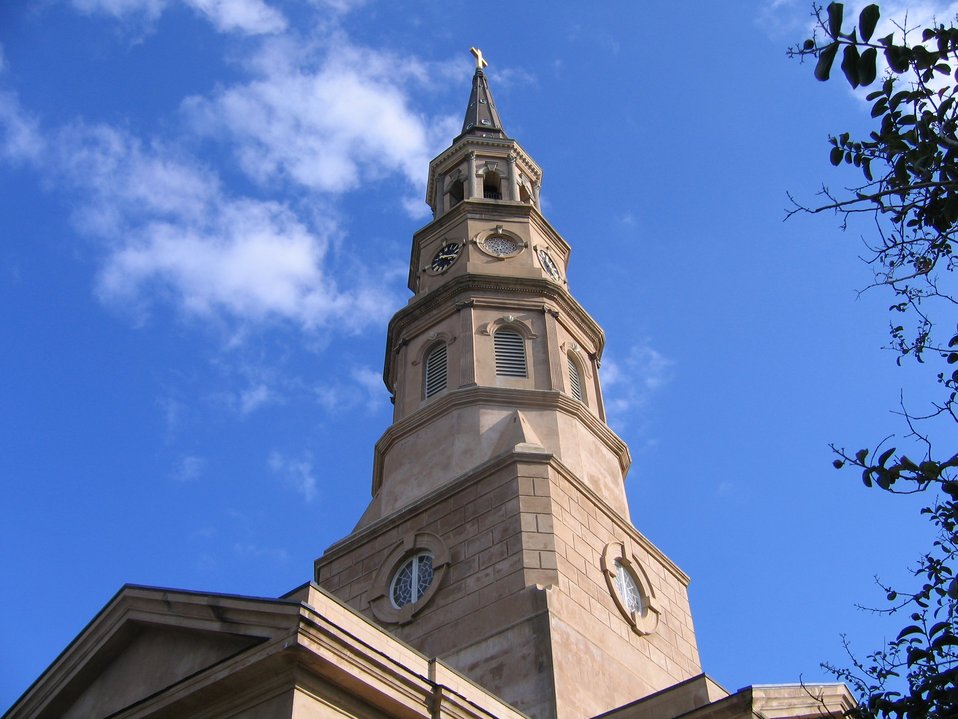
St. Philip's Church Spire. The church was founded in 1680 but this edifice was erected in 1850 and survived the Charleston earthquake of 1886.